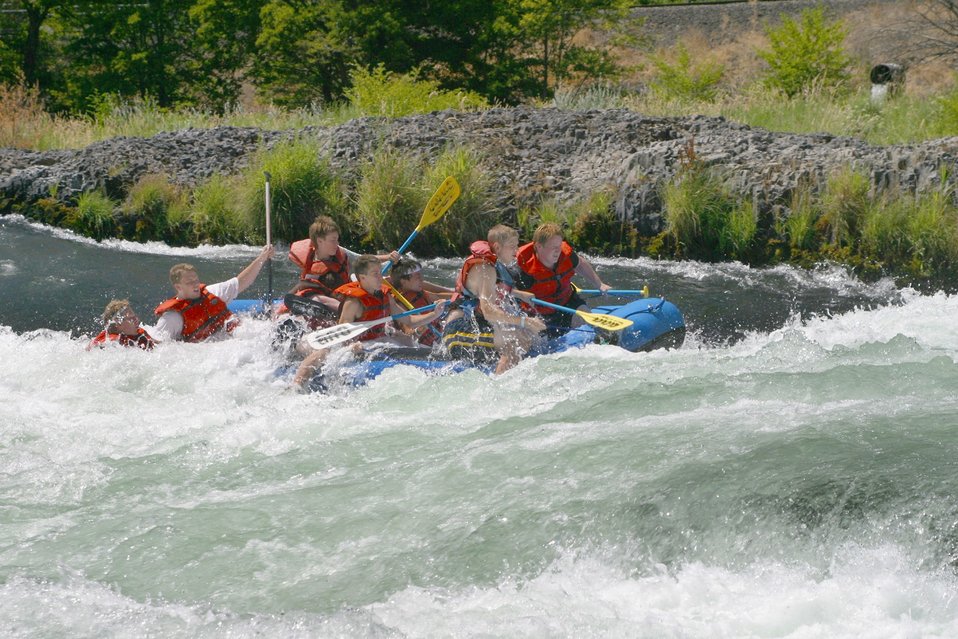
Oak Springs is a Class IV Rapids. The left channel has shallow rocks, large standing waves, turbulent currents and a large hole during high flows. The right channel has a large hole, shallow rocks, and turbulent currents. 7/26/03 Pelton Dam 3600 cfs: Moody Rapids 4300 cfs.